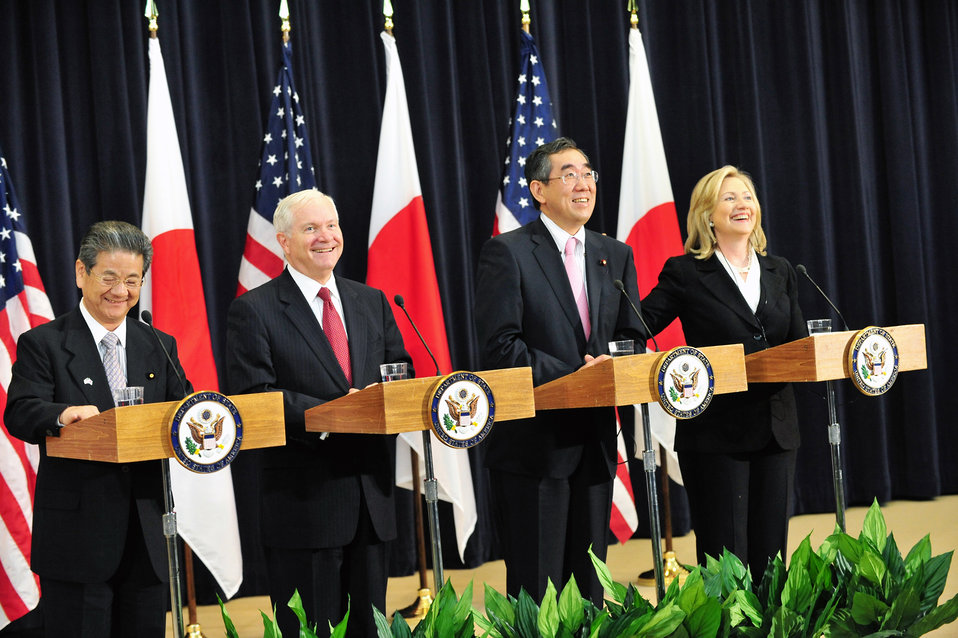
Secretary Clinton, Japanese Foreign Minister Matsumoto, Secretary Gates, and Japanese Defense Minister Kitazawa Hold a Joint Press Conference

U.S. Secretary of State Hillary Rodham Clinton, right; Japanese Foreign Minister Takeaki Matsumoto; center right; U.S. Secretary of Defense Robert Gates, center left; and Japanese Defense Minister Toshimi Kitazawa, left; hold a joint press conference after the U.S.-Japan Security Consultative Committee meeting, known as the 2 2, at the U.S. Department of State in Washington, D.C., on June 21, 2011.